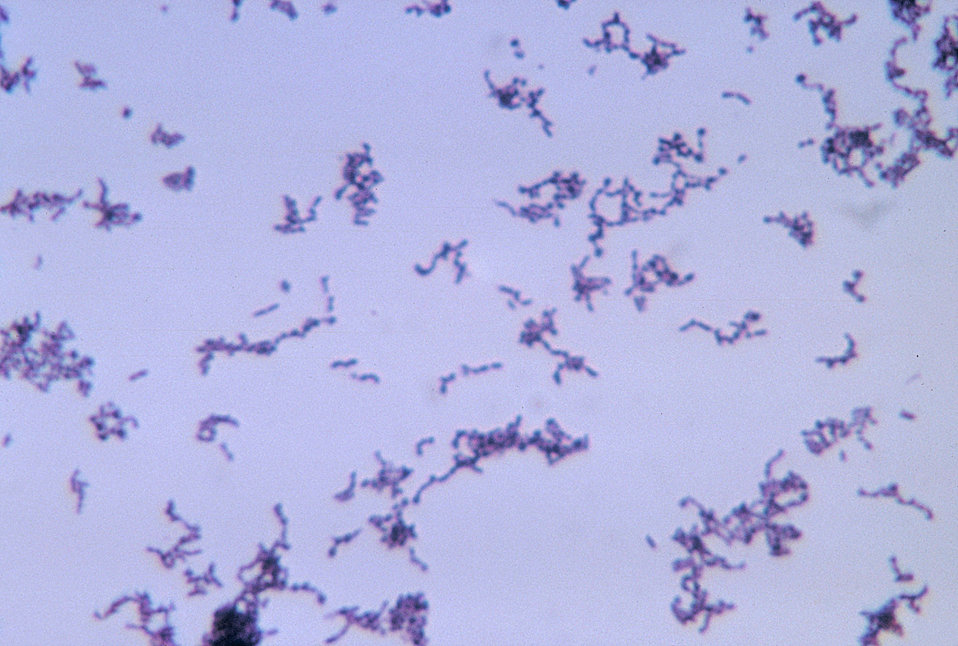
This micrograph depicts the gram-positive bacterium Propionibacterium acnes grown in thioglycollate medium at 48 hours.